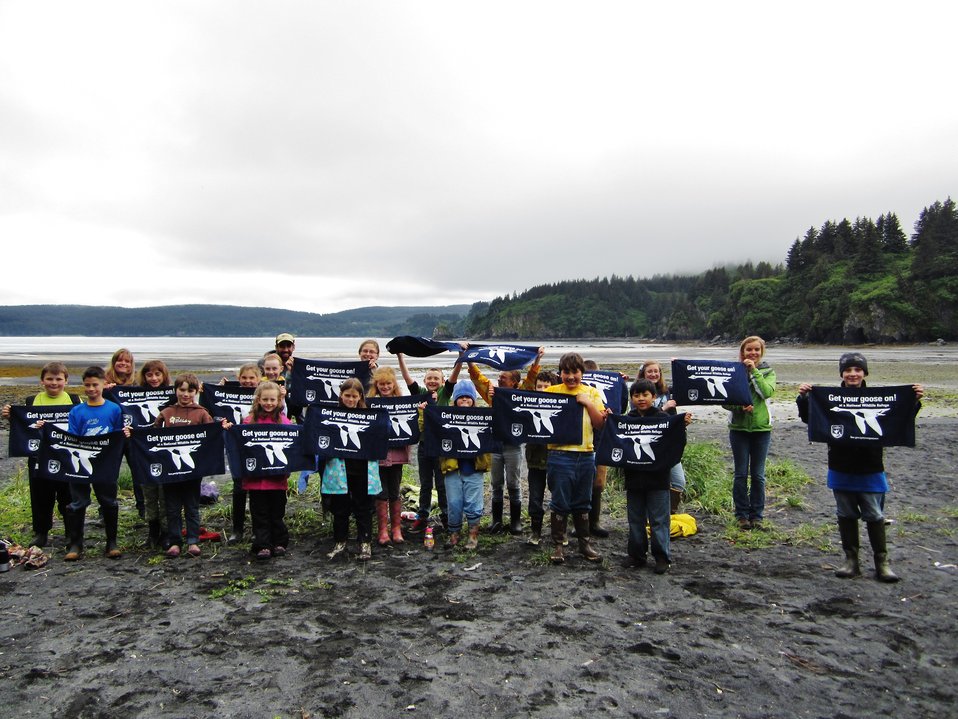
Get Your Goose On! - Alaska Style

Kodiak Refuge Summer and Science Art Camp. Campers: McKenna Donohue, Bailey Mullen, Solomon Himelbloom, Tymber Bashem, Gage Johnson, Dominic Conol, Anastasia Gauthier, Abigail Groncki, Ashley Cowin, Leslie Spear, Brayden Pfister, Myah Morrison, Dylan Morrison, Olivia Young, Samantha Burnside, Tito Sabangan, Ava Pruitt, Greyson Lincoln. USFWS staff/volunteers: Kristen Riesberg, Ali Sutton, Rory Psotka and Kari Eschenbacher.

Credit: Kari Eschenbacher / USFWS

The Kodiak National Wildlife Refuge is a United States National Wildlife Refuge in the Kodiak Archipelago in southwestern Alaska, United States.

The Kodiak National Wildlife Refuge includes the southwestern two-thirds of Kodiak Island, Uganik Island, the Red Peaks area of Afognak Island and all of Ban Island in the archipelago. It encompasses 1,990,418 acres (8,054.94 km2).[2] The refuge is administered from offices in Kodiak.

The refuge contains seven major rivers and about 100 streams. It is a spawning ground for all six species of Pacific Ocean salmon, trout and several other fish species, as well as a nesting ground for 250 species of bird, many of which feed on salmon. The refuge has only six native species of mammals: Kodiak brown bear, red fox, river otter, ermine, little brown bat and tundra vole. The non-native mammals Sitka deer, mountain goat, Roosevelt elk, snowshoe hare and beaver were introduced to the archipelago between the 1920s and 1950s and are now hunted and trapped.

The climate of the refuge is that of southern Alaska, mild and rainy. Many areas in the refuge are densely forested with Sitka Spruce at lower elevations. There are grasslands in drier areas and at higher elevations. The refuge contains several small glaciers.